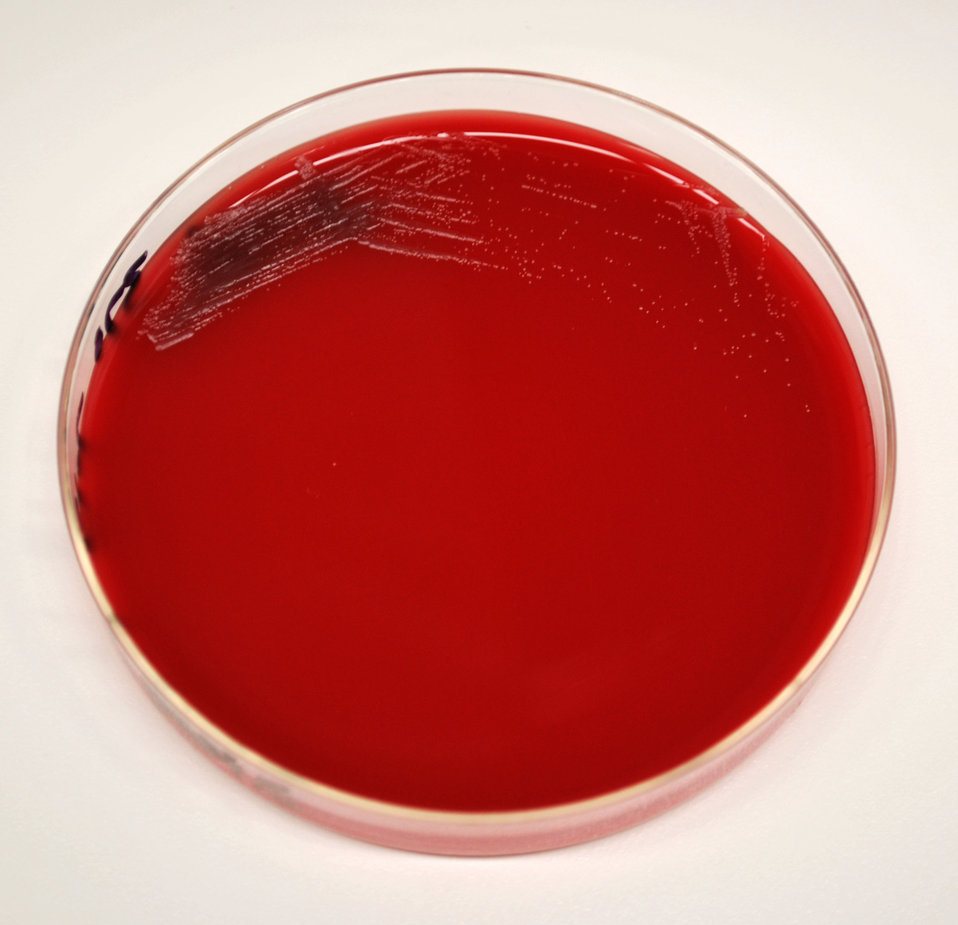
This image depicts a Petri dish containing a sheep's blood agar (SBA) medium, which had been inoculated with Gram-negative Yersinia pestis bacteria. Y. pestis is the pathogen responsible for causing human plague. This was the appearance of the colonial growth after 24 hours of incubation at 37� C.